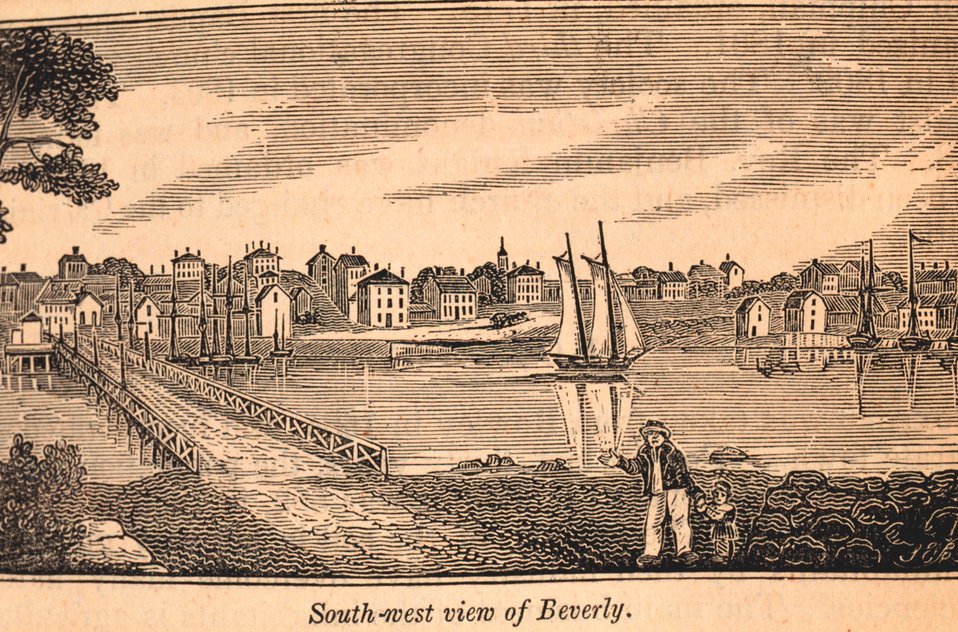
A view of the southern part of Beverly, as seen from the bridge connecting it with Salem. In: Historical Collections ... of Every Town in Massachusetts. 1841.